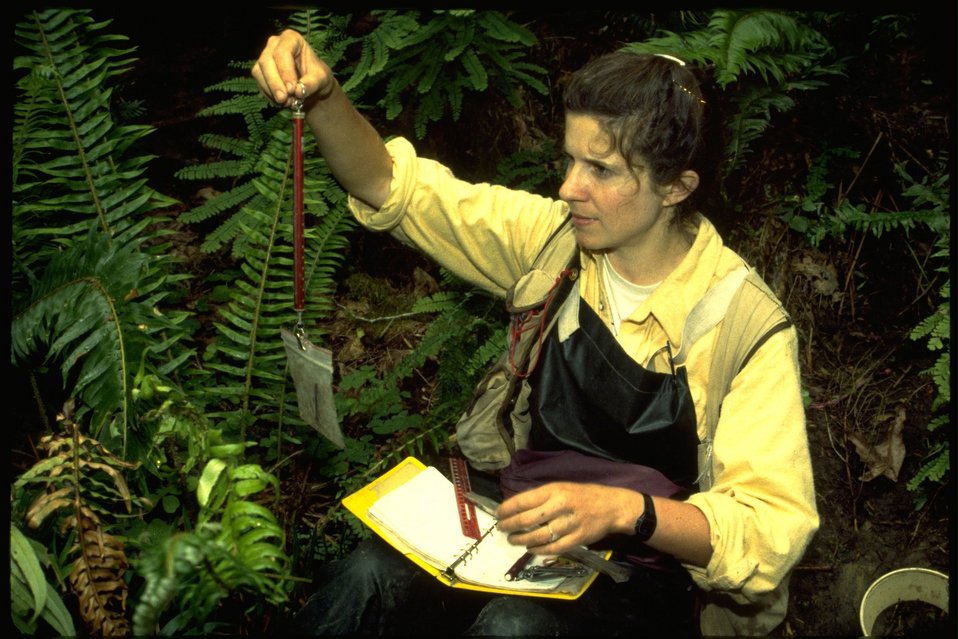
Field worker conducting an amphibian study.